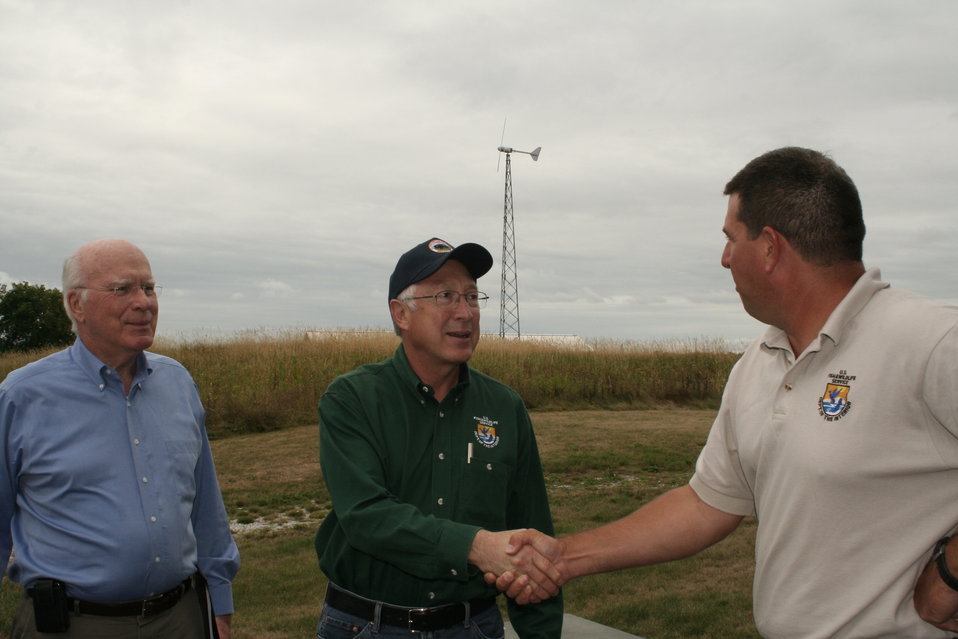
USFWS Chris Smith welcomes Secretary Salazar and Senator Leahy

USFWS Chris Smith (right) welcomes Department of Interior Salazar (center) and Senator Leahy (left) to Missisquoi NWR.